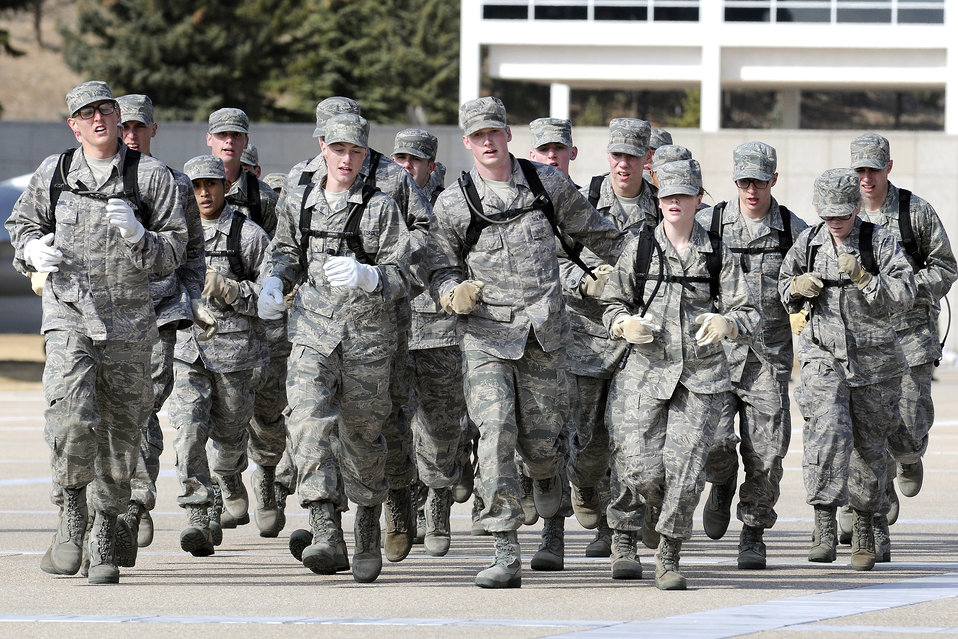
US Air Force Academy, CO

Members of cadet squadron 36 run to their next station on the U.S. Air Force Academy's Terrazzo during Recognition. Recognition marks the transition of the fourth classmen to upper class status. It is the ceremonial acknowledgement that the fourth class has successfully met the training requirements expected of it, and is prepared to continue its four-year journey through the Academy.